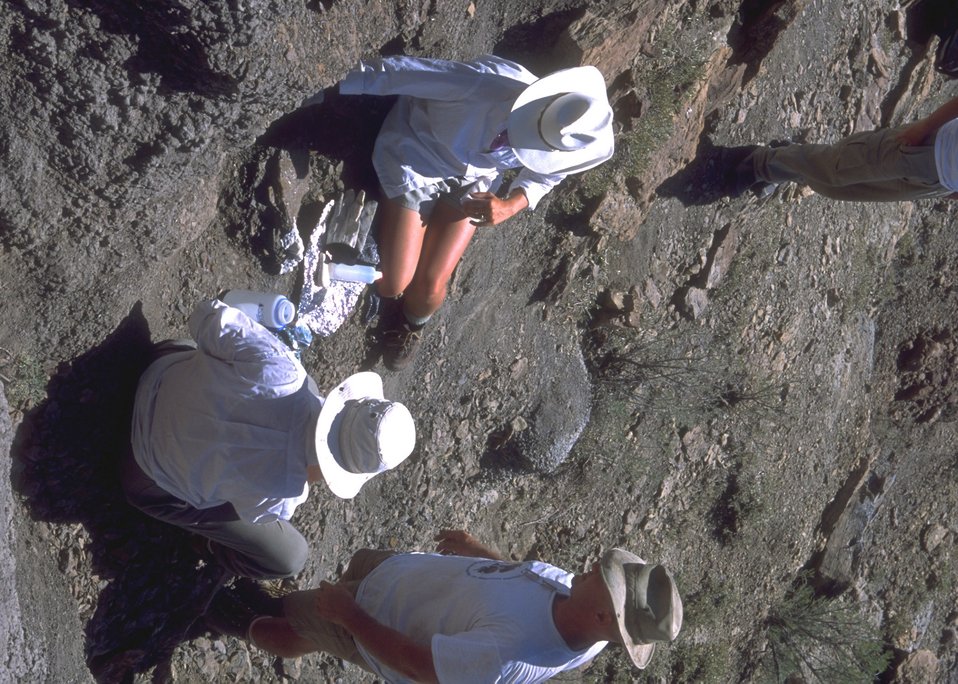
Paleontologist preparing a cast for a dinosaur bone, Lance Creek Fossil Area, Newcastle Field Office.